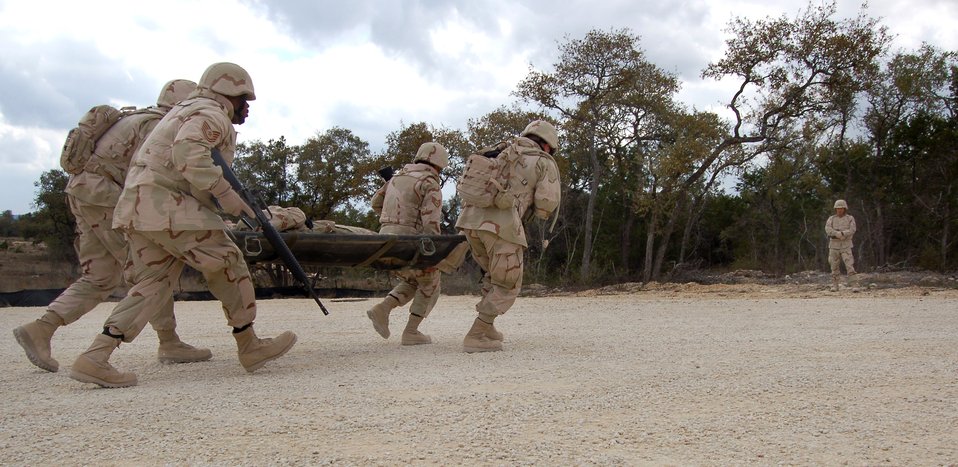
Airmen receive Iraqi training

Students at the specialized mission course carry a simulated injured Airmen during combat convoy training at Camp Bullis, Texas. The two week course is the students first step in a mission that will help the Iraqi air force rebuild their technical schools.